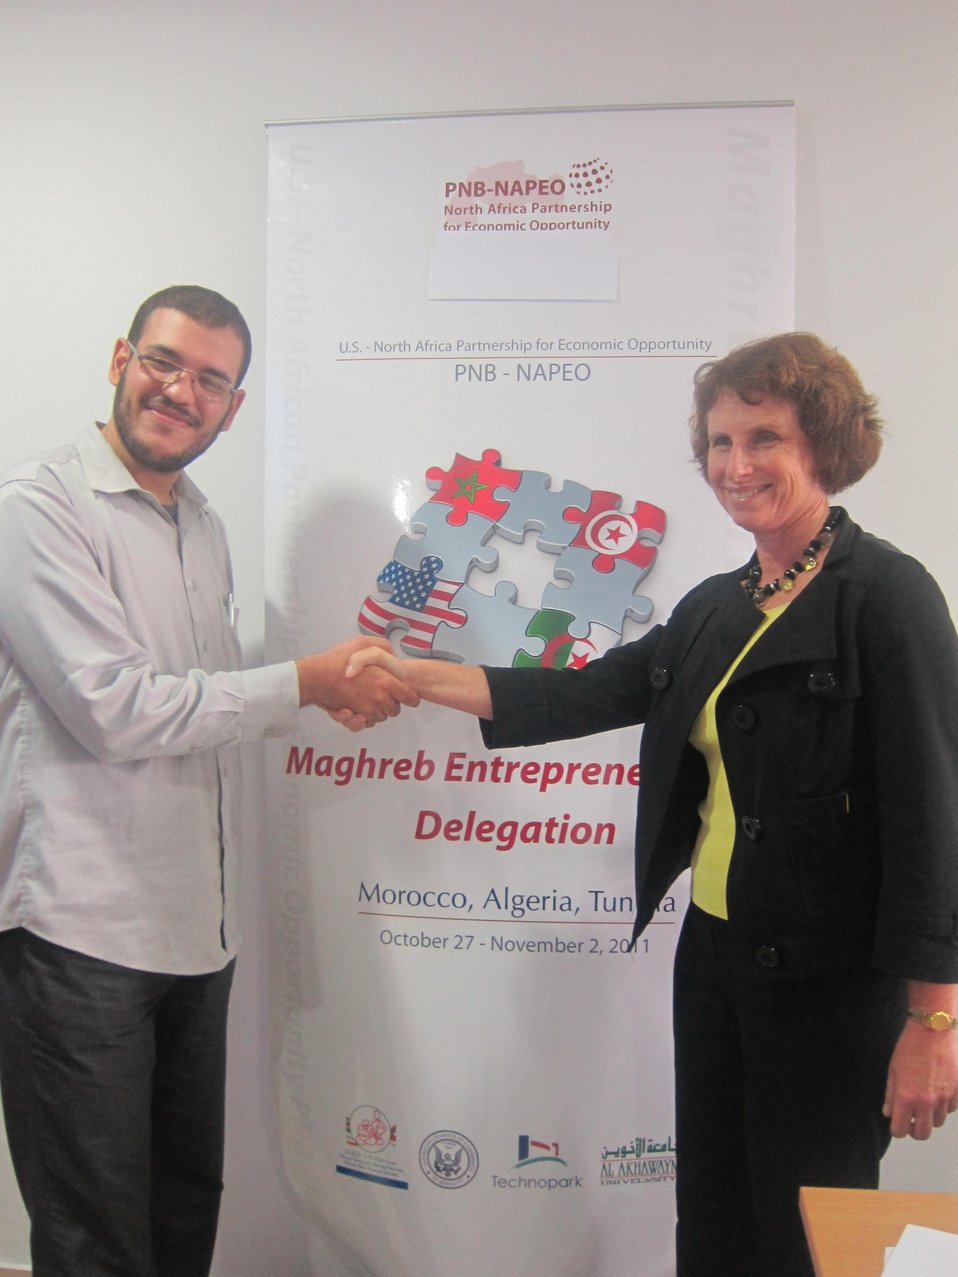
Special Representative Hariton Shakes Hands With Algerian Tech Town Winner Benali

Special Representative for Commercial and Business Affairs Lorraine Hariton shakes hands with Youghourta Benali, Maghreb Delegation in Algeria winner and founder of Walletix, in Algiers, Algeria, on October 30, 2011.